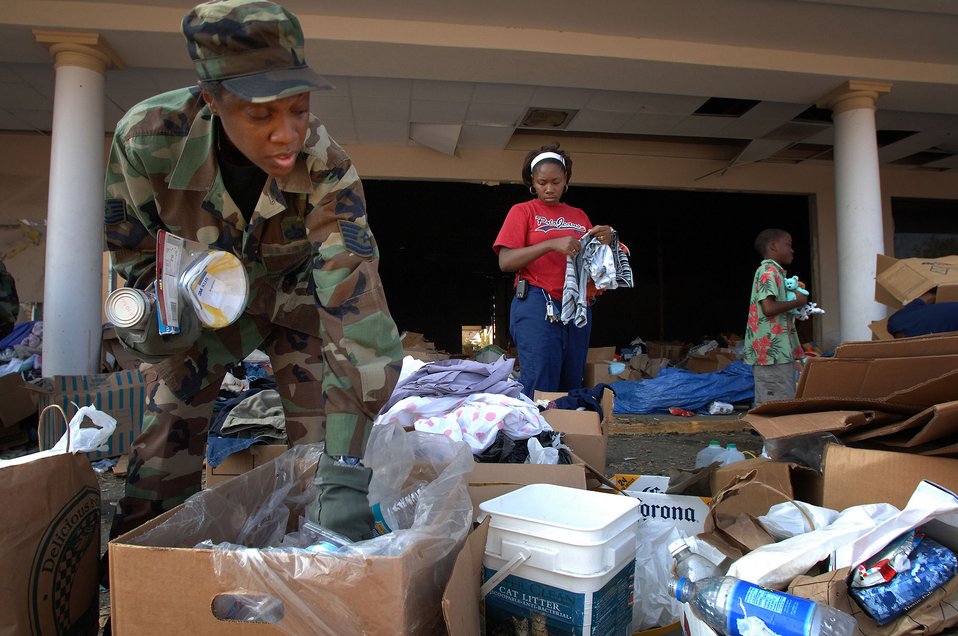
Sorting things out

BILOXI, Miss. -- Tech. Sgt. Dawn Daniels helps organize merchandise at a local donation center. She is a personnel specialist from the 305th Mission Support Squadron at McGuire Air Force Base, N.J. She is deployed to nearby Keesler Air Force Base supporting the base's hurricane recovery operation.